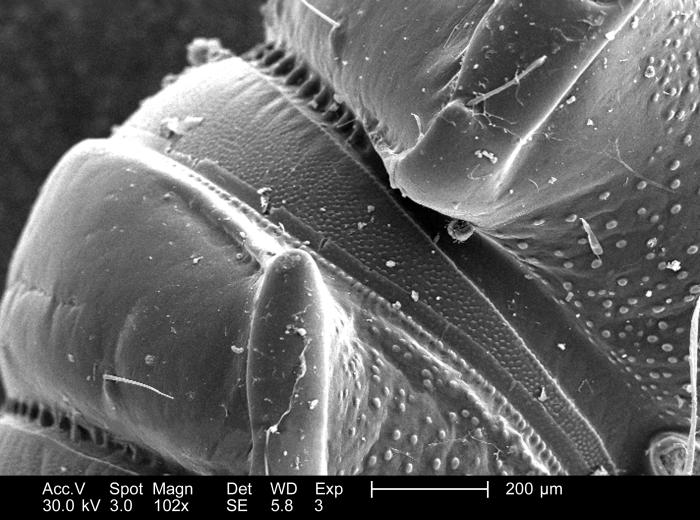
Magnified 102x, this scanning electron micrograph (SEM) depicted the many variations in patterns displayed on the chitinous exoskeletal surface of this millipede that had been found deceased on the ground in the Decatur, Georgia suburbs.